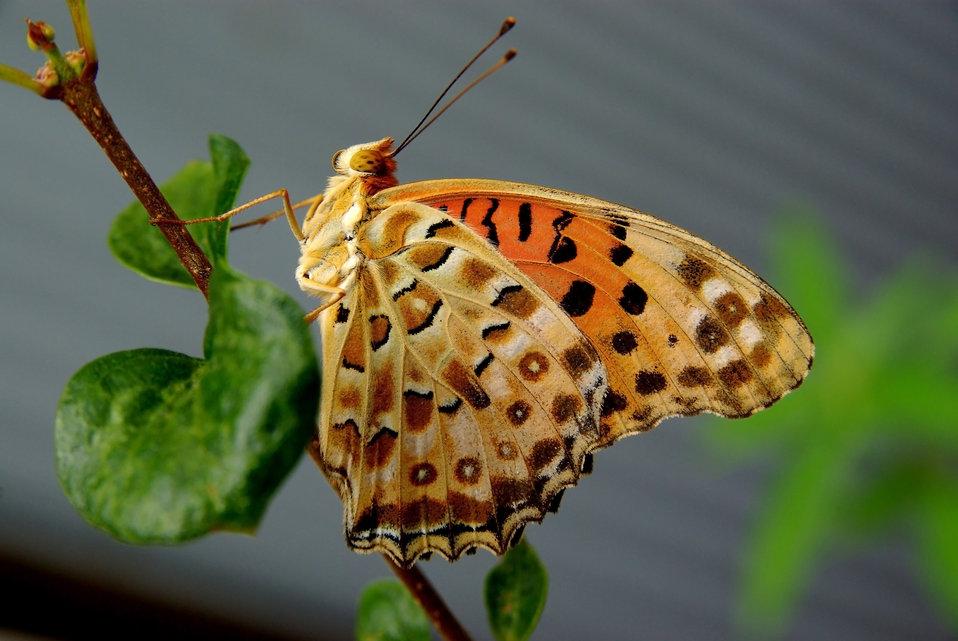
Name Argyreus hyperbius Family Nymphalidae Indian Fritillary 日本語: ツマグロヒョウモン Tiếng Việt: Bướm hoa Ấn Độ male,(side)
This picture was taken at Osaka, Japan.